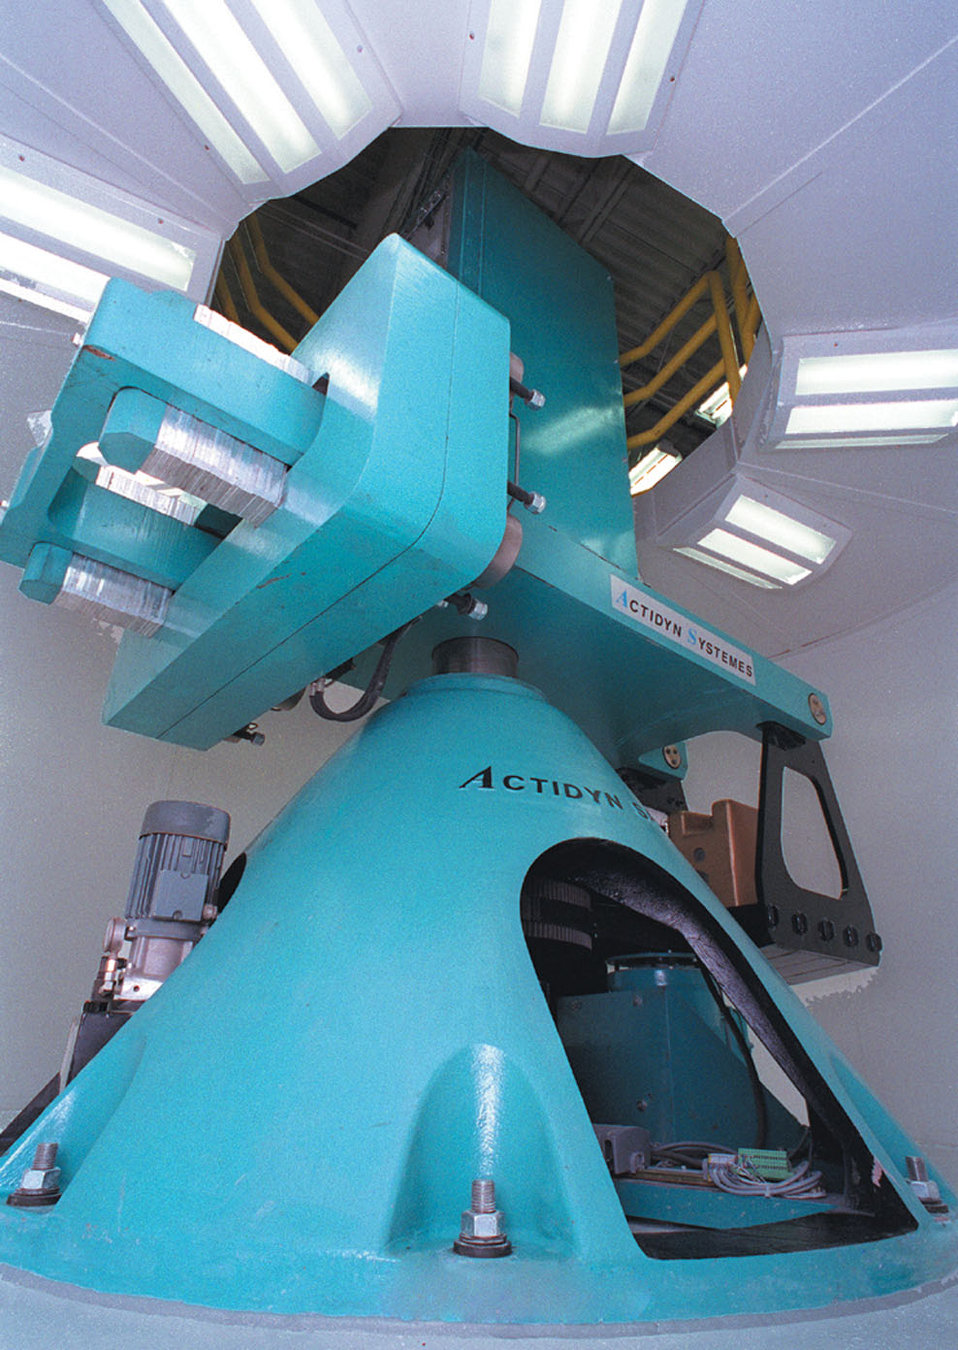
At Idaho National Laboratory, the geocentrifuge subjects a sample to high-gravity field by spinning it rapidly around a central shaft.
In this high-gravity field, processes such as fluid flow, occur much more rapidly. Using this technique, researchers can study the effect of tens of years of gravity-induced fluid movement in a few days or weeks.